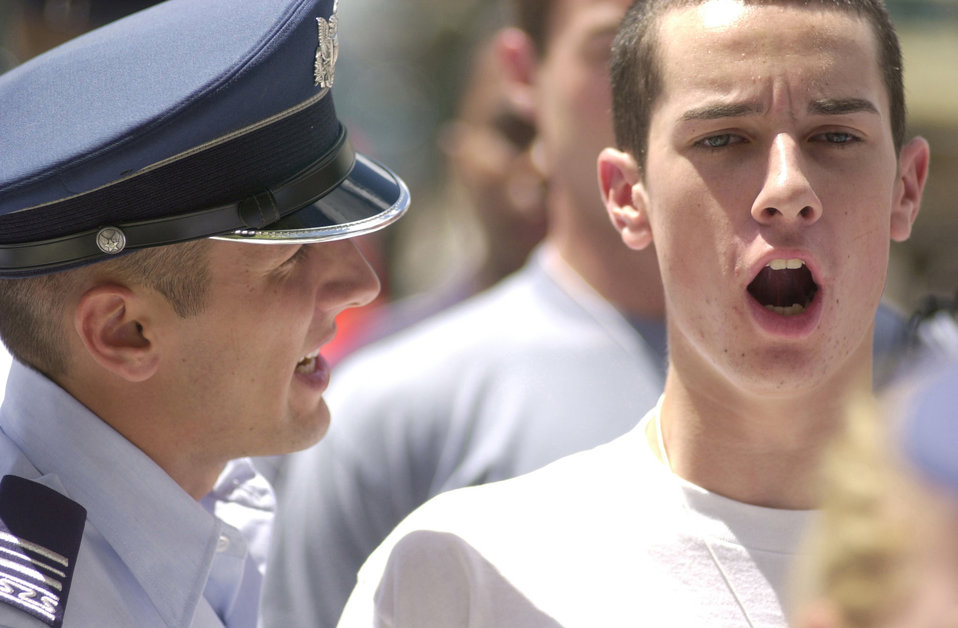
Yes sir!

U.S. AIR FORCE ACADEMY, Colo. -- Cadet 1st Class and training cadre member Stephen Olivares admonishes a trainee who is in the midst of reciting his seven basic responses at the start of cadet basic training at the U.S. Air Force Academy.